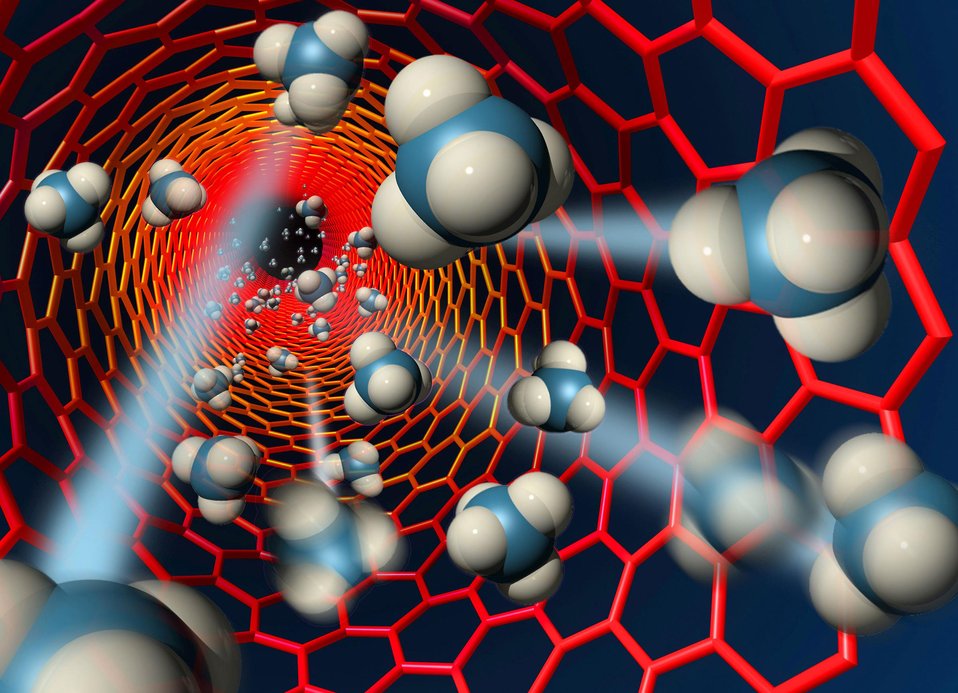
ARTIST'S RENDERING OF METHANE MOLECULES FLOWING THROUGH A CARBON NANOTUBE LESS THAN TWO NANOMETERS IN DIAMETER AT LAWRENCE LIVERMORE NATIONAL LABORATORY.

A NANOTUBE MEMBRANE ON A SILICON CHIP THE SIZE OF A QUARTER MAY OFFER A CHEAPER WAY TO REMOVE SALT FROM WALTER. THE NANOTUBES ARE SPECIAL MOLECULES MADE OF CARBON ATOMS IN A UNIQUE ARRANGEMENT, ARE HOLLOW AND MORE THAN 50, 000 TIMES THINNER THAN A HUMAN HAIR. MEMBRANES THAT HAVE CARBON NANOTUBES AS PORES COULD BE USED IN DESALINATION AND DEMINERALIZATION. THESE NANOTUBE MEMBRANES ARE MORE PERMEABLE AND COULD REDUCE THE ENERGY COSTS OF DESALINATION UPT TO 75% COMPARED TO CONVENTIONAL MEMBRANES USED IN REVERSE OSMOSIS.